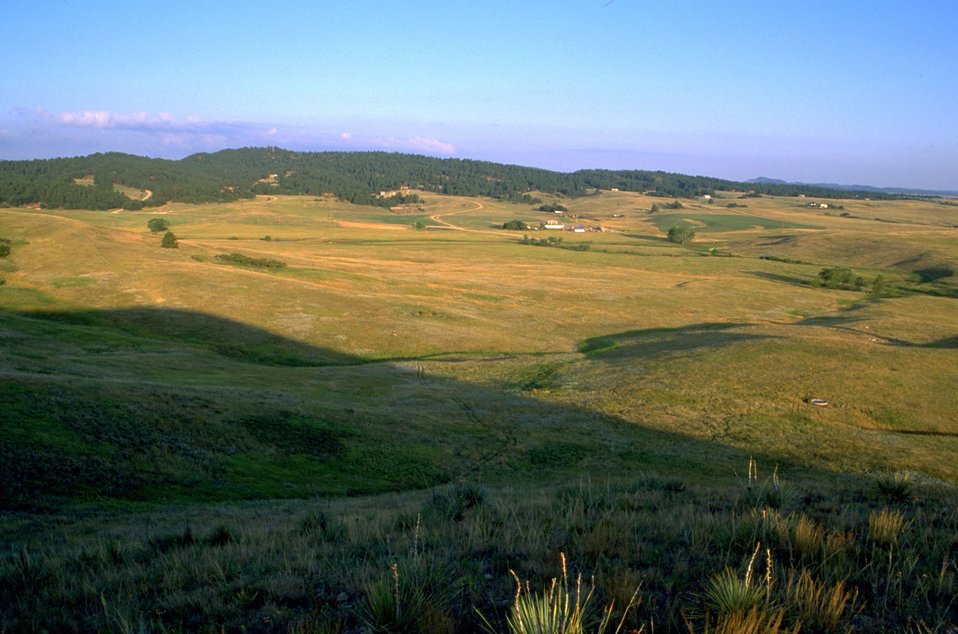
Roth Subdivision at the north end of Fort Meade